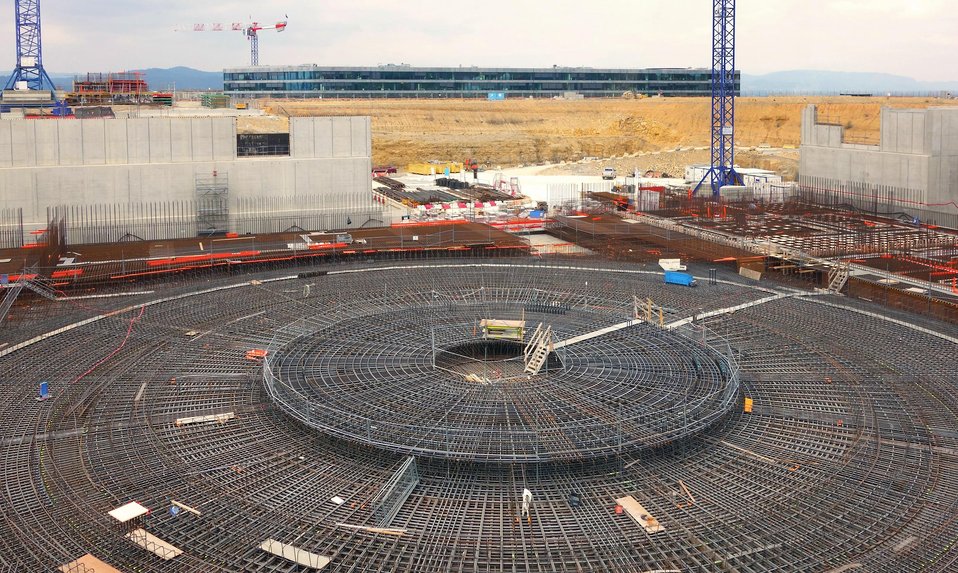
FOUNDATION OF THE INTERNATIONAL THERMONUCLEAR EXPERIMENT REACTOR (ITER) TOKAMAK BUILDING. THE ITER HEADQUARTERS BUILDING IS IN THE BACKGROUND.